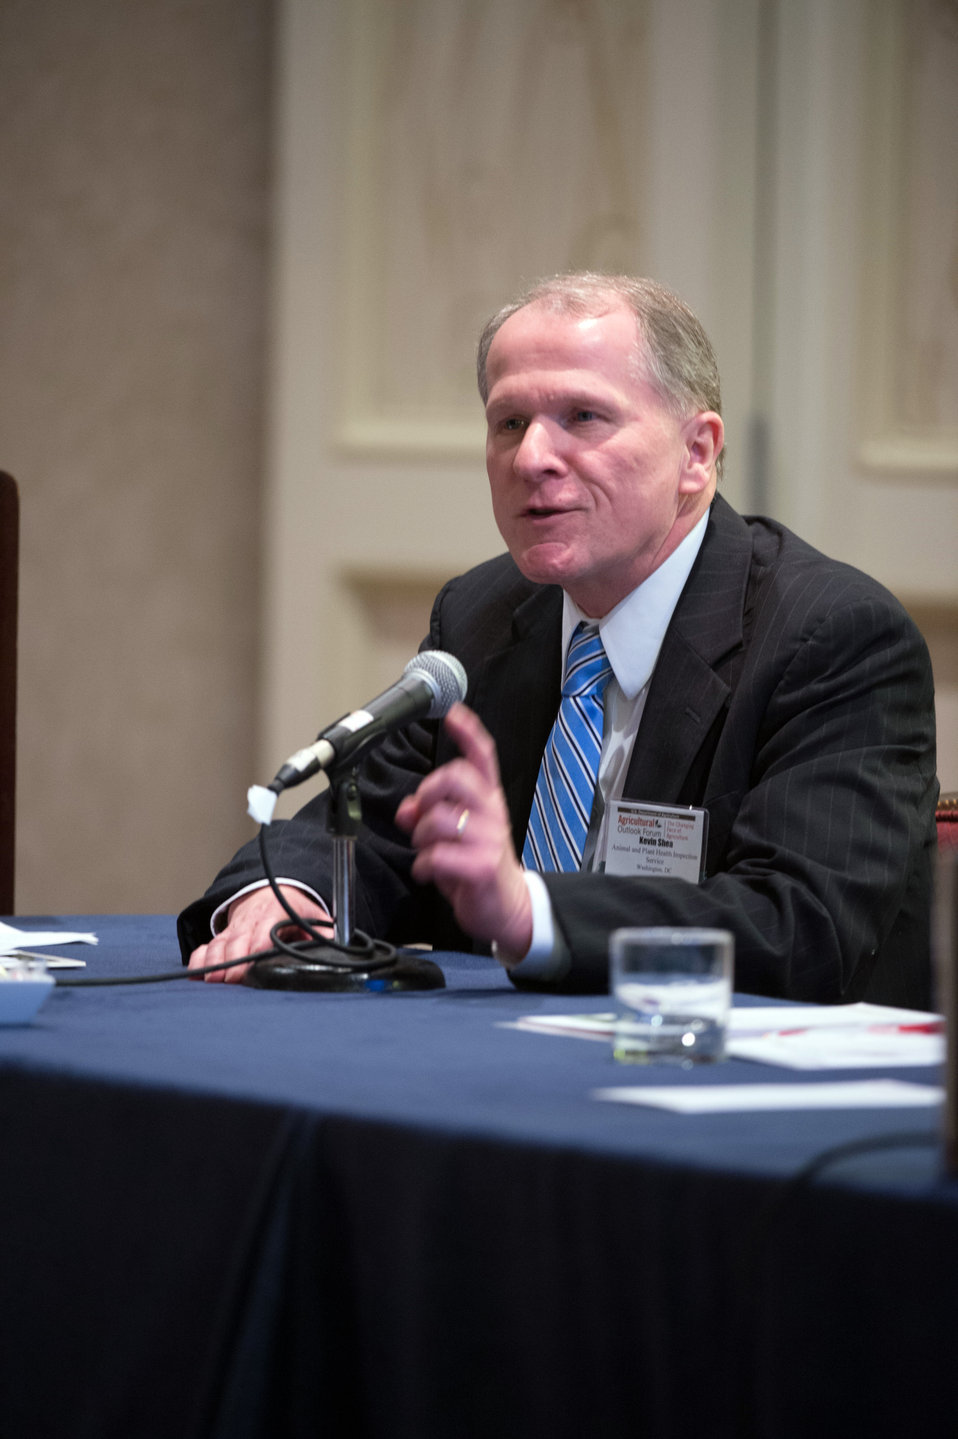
U.S. Department of Agriculture (USDA) Animal and Plant Health Inspection Service (APHIS) Administrator Kevin Shea speaks at the panel on Protecting U.S. Animal and Plant Health from Invasive Pests at the 2014 Agricultural Outlook Forum on Thursday, Feb. 20, 2014 in Arlington, VA. The panel discussed how USDA is protecting U.S. agricultural health from invasive pests in times of diverging stakeholder interests and constraining resources. The session focused on USDA’s collaborative work with States, industries, and international trade. USDA’s annual Agricultural Outlook Forum brings together the agricultural community to discuss policy, trade, science, rural development, and the economic outlook for the coming year. The Forum also focuses on forestry, health and nutrition issues, and the changing dynamics and face of rural America.